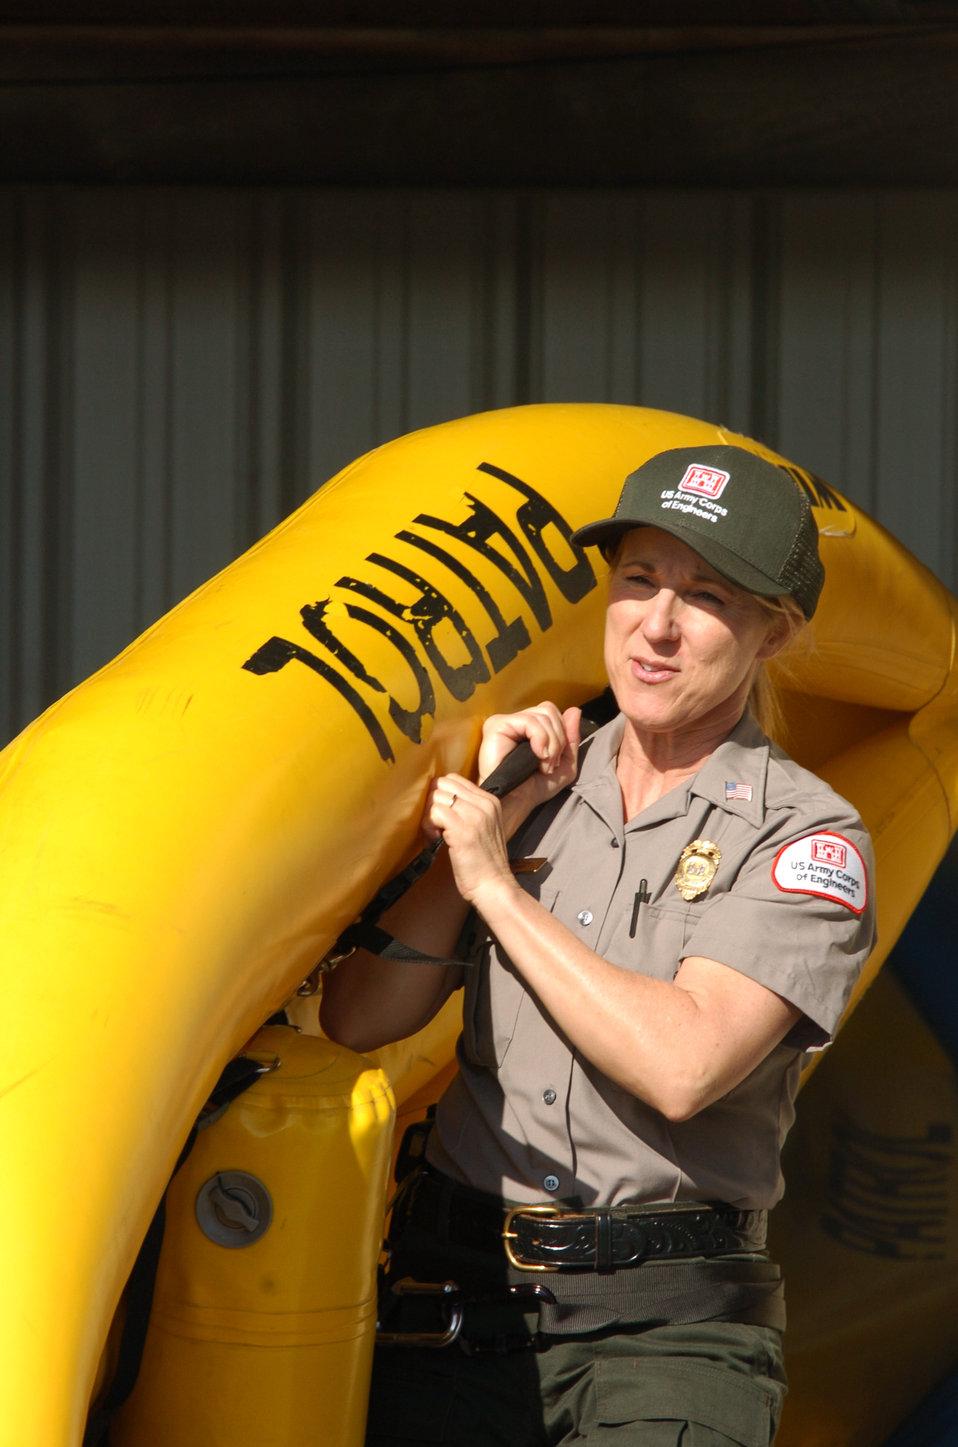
STANISLAUS RIVER PARKS, Calif. (Feb. 23, 2011) - U.S. Army Corps of Engineers Sacramento District park ranger Heather Wright prepares for kayak patrol along the Stanislaus River in Northern California. Stanislaus River Parks is just one of 423 lakes and river projects managed by the Corps nationwide.